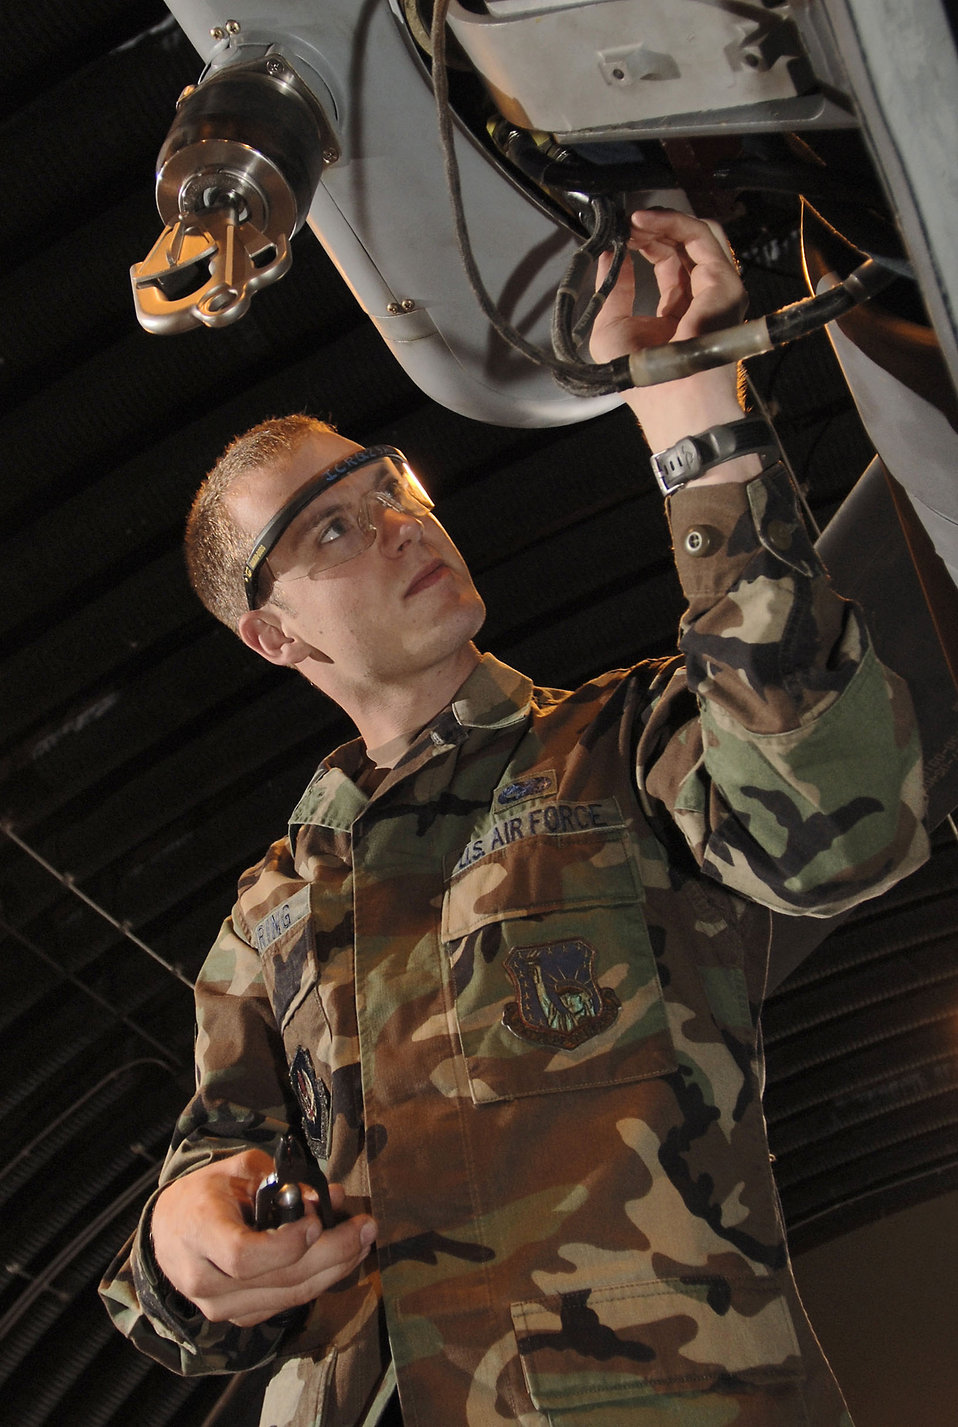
Airman works on aircraft

Airman 1st Class Ryan Goehrine installs a hoist on an HH-60G Pave Hawk helicopter at Royal Air Force Lakenheath, England, on Aug. 2. The Airman is with the 56th Aircraft Maintenance Unit, which maintains the helicopters for the 56th Rescue Squadron.